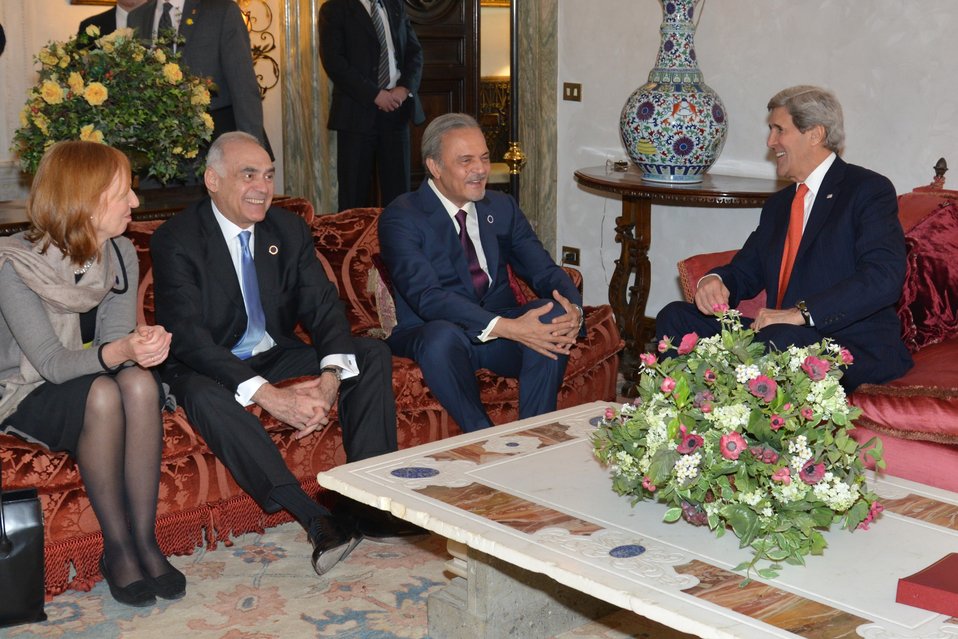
Secretary Kerry Discusses Syria With Foreign Ministers

U.S. Secretary of State John Kerry speaks with Saudi Foreign Minister Prince Saud al-Faisal, Egyptian Foreign Minister Mohamed Kamel Amrin, and a representative of the German Foreign Ministry in Rome, Italy, on February 28, 2013.